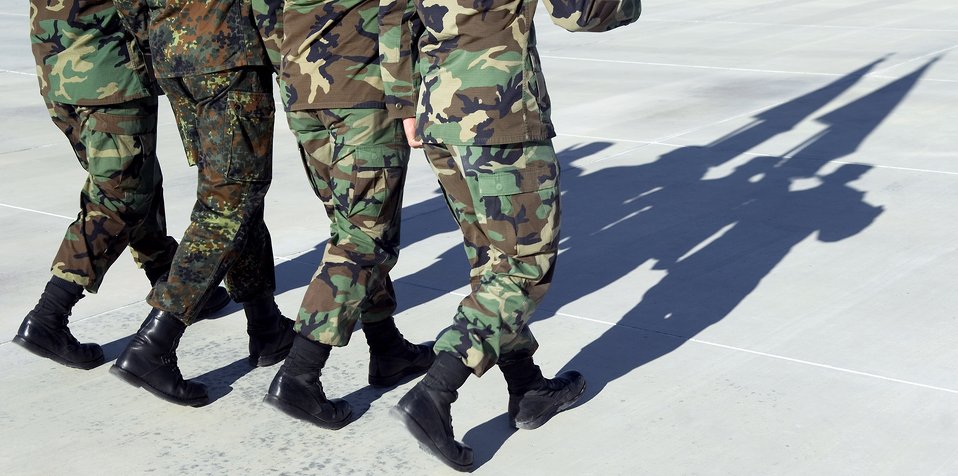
German airman assists with Holloman ceremony

German air force Senior Airman Steffen Hanke (second, from left) holds the German flag while training with U.S. Air Force honor guard members of the 49th Mission Support Squadron Jan. 15 at Holloman Air Force Base, NM. Airman Hanke was selected to join the base honor guard team and has more than seven years of honor guard experience with the German air force. Holloman AFB is host to German Air Force Tactical Training Center with more than 300 German air force members stationed there. Germany is one of the strongest allies of the U.S. in NATO and the joint training is important for allied armed forces to train together to ensure effectiveness when called upon to serve together.